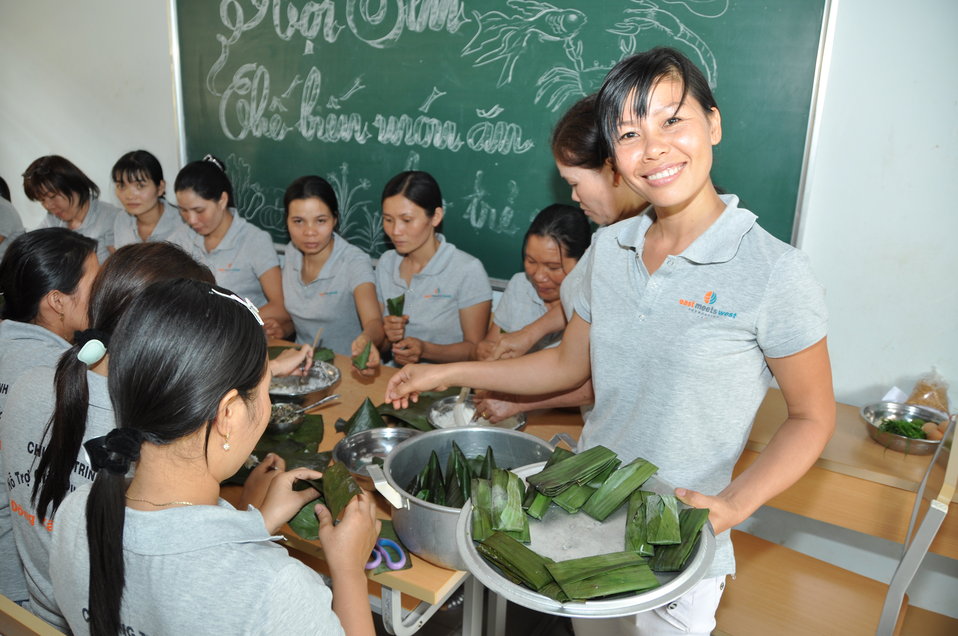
USAID and EMW support teacher training for young ethnic minority children in Kon Tum, Vietnam